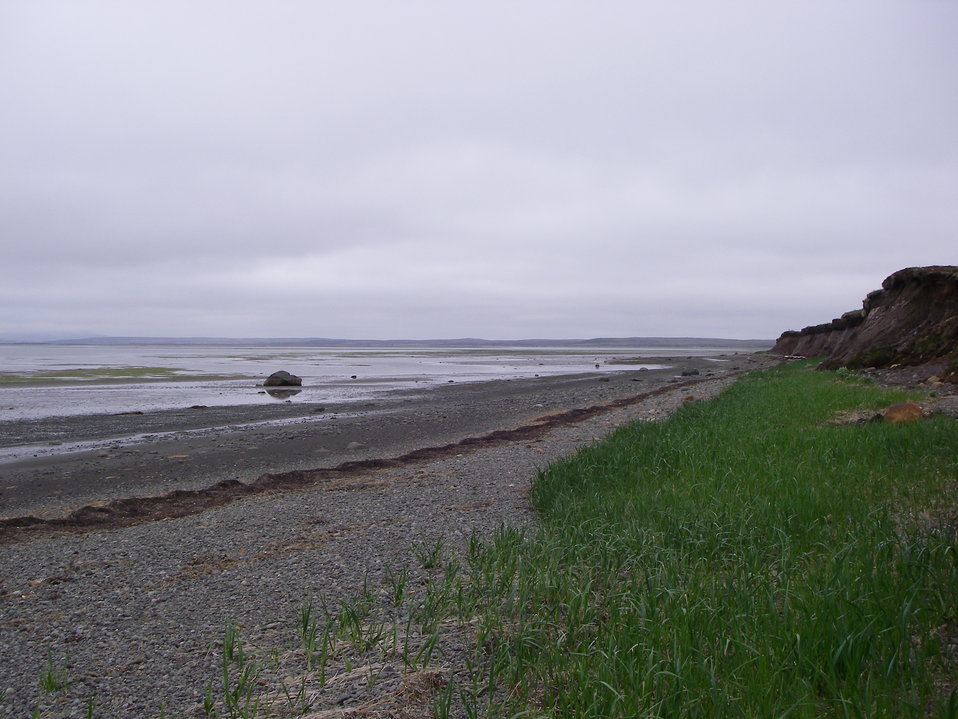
Beach in Kinzarof Lagoon

Kinzarof Lagoon, Izembek National Wildlife Refuge